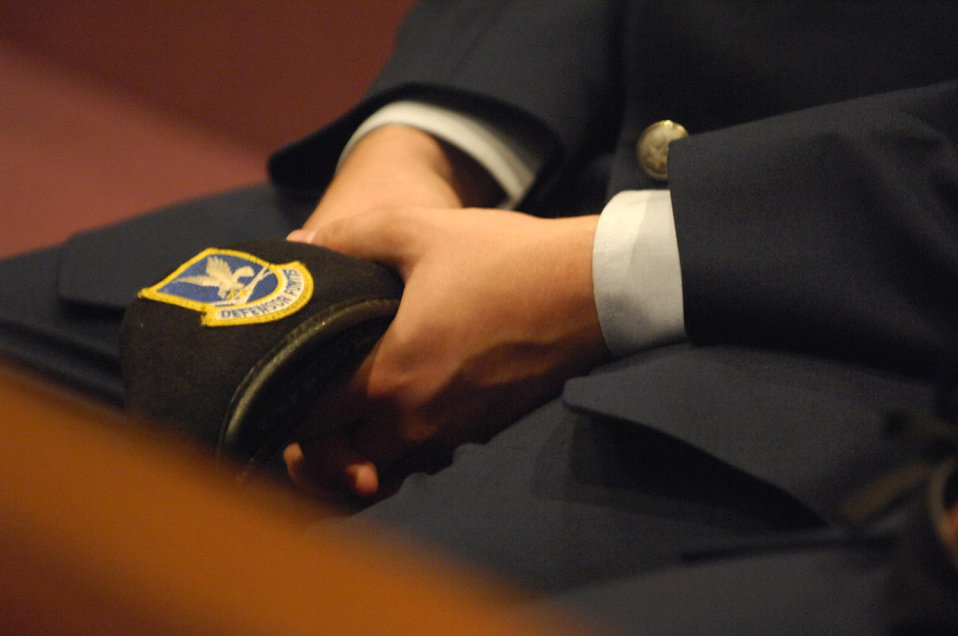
Fallen Airman honored during memorial service

Airman 1st Class LeeBernard Chavis from 824th Security Forces Squadron, was honored Oct. 19, 2006 during a memorial service held in the base chapel at Moody Air Force Base, Ga. Airman Chavis was posthumously awarded the Bronze Star and Purple Heart after he was killed Oct. 14 while on patrol in Baghdad, Iraq.